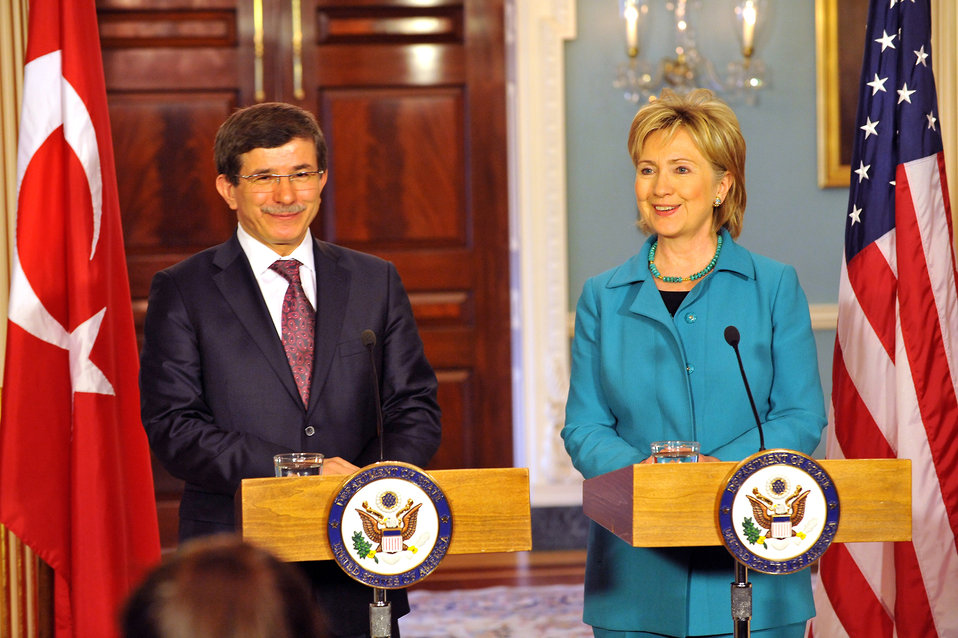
Secretary Clinton Meets With Turkish Foreign Minister

U.S. Secretary of State Hillary Rodham Clinton meets with Turkish Foreign Minister Ahmet Davutoglu at the U.S. Department of State in Washington, DC June 5, 2009.